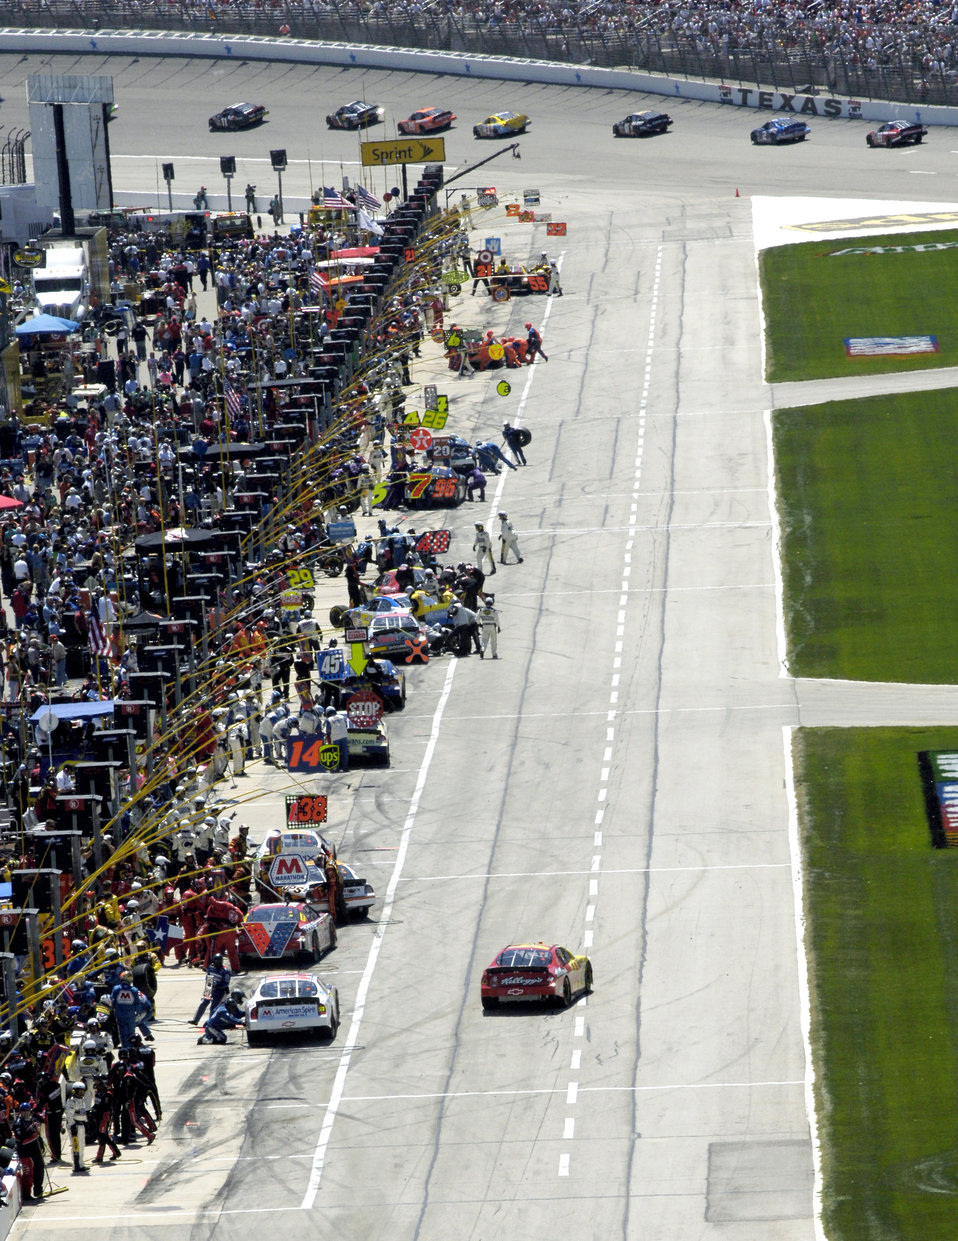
NASCAR thrills

NASCAR Nextel Cup Series cars pit during the Samsung/RadioShack 500 on Sunday, April 9, 2006, at Texas Motor Speedway. Number 9 Kasey Kahne won the race, while the number 21 Motorcraft/Air Force car finished 16th in a field of 43 drivers.